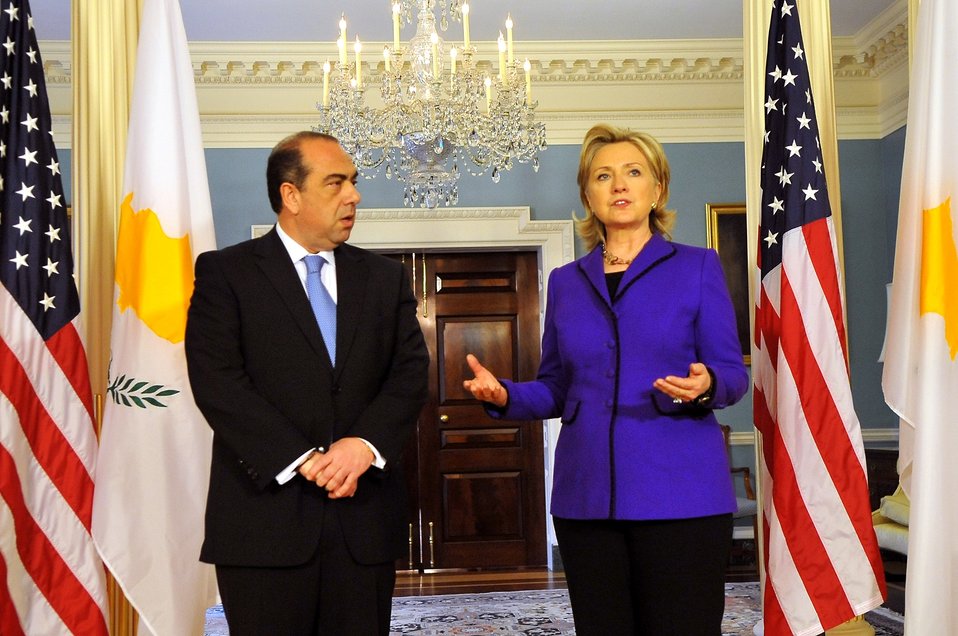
Secretary Clinton With Foreign Minister Kyprianou of Cyprus

U.S. Secretary of State Hillary Rodham Clinton holds a bilateral meeting with Foreign Minister Kyprianou of Cyprus at the U.S. Department of State, Washington, DC March 26, 2010.